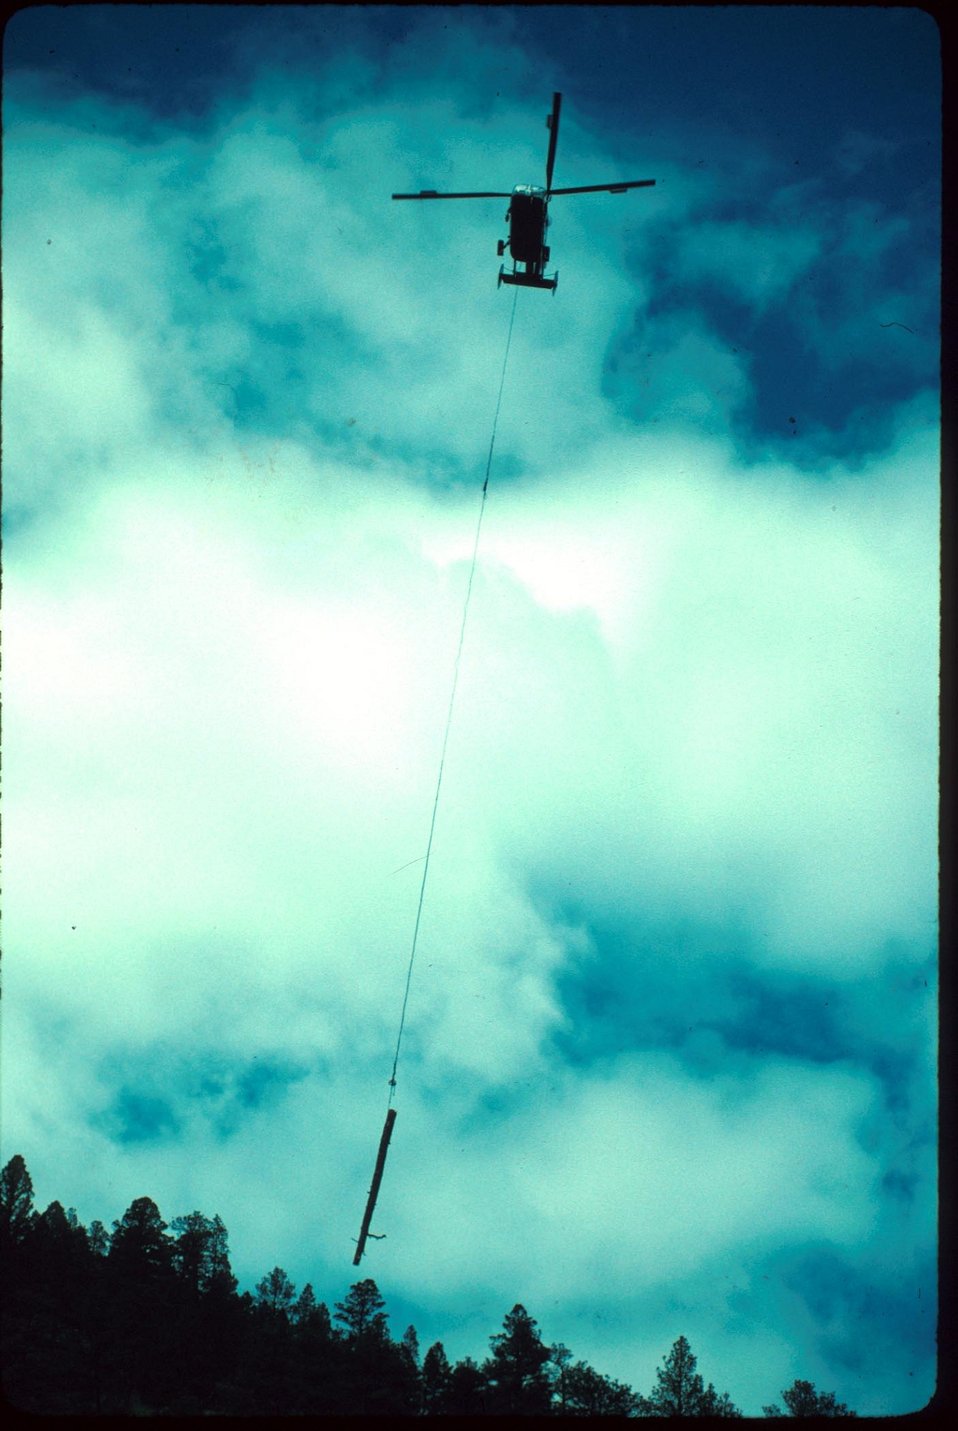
Upper Blackfoot Salvage Logging Idaho Falls Upper Snake River District